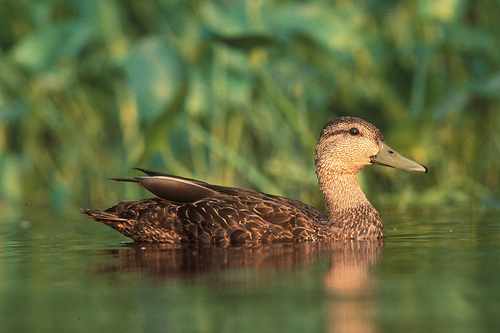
Black duck swimming at Blackwater National Wildlife Refuge, MD.